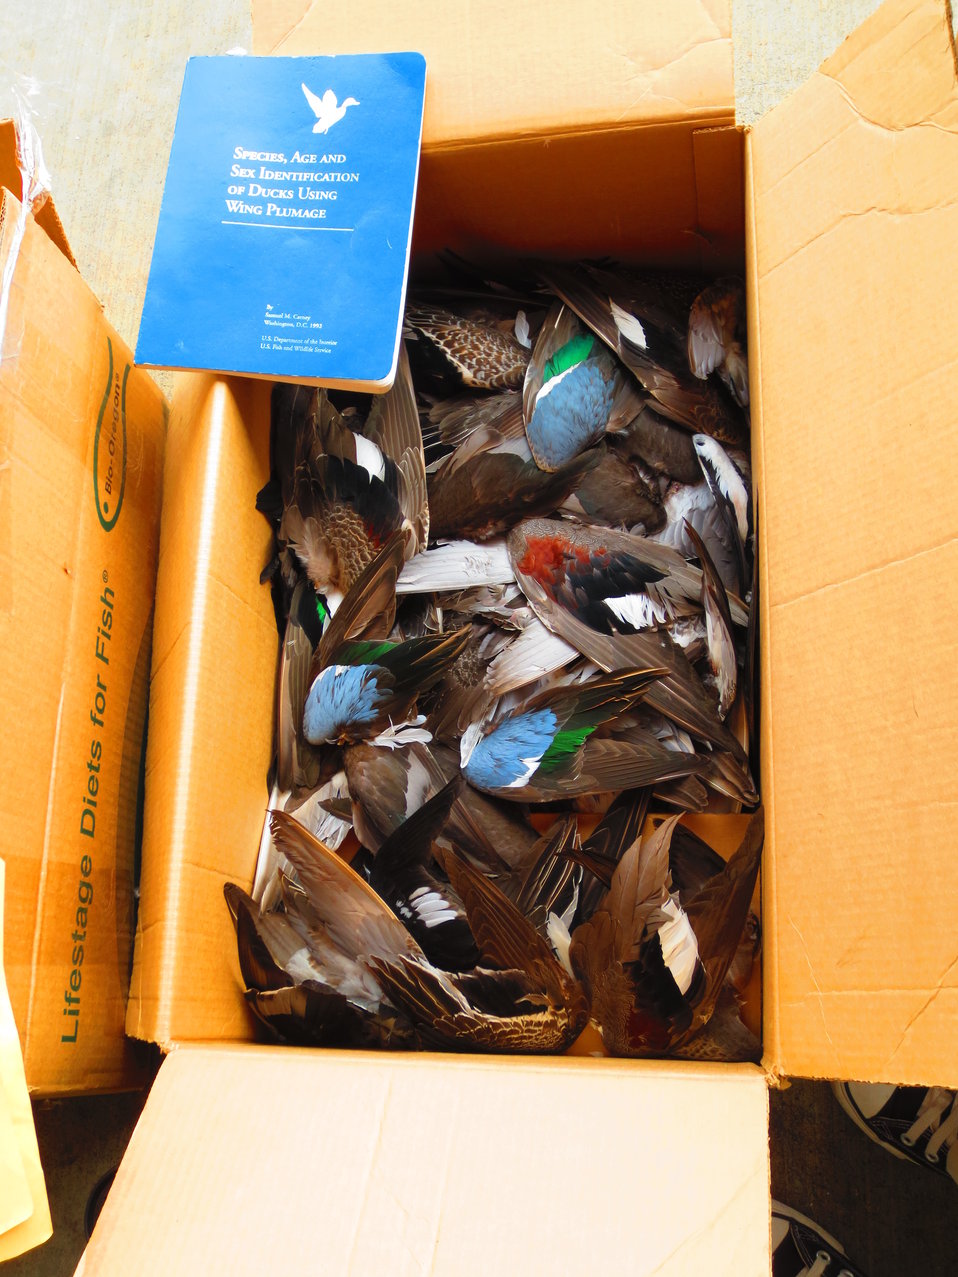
Colorful Wings

After the duck wings are identified and the sex and age are recorded the wings are then given to the Zuni Tribe of New Mexico. The tribe uses the colorful wings in various ceremonies that connect their people with nature.